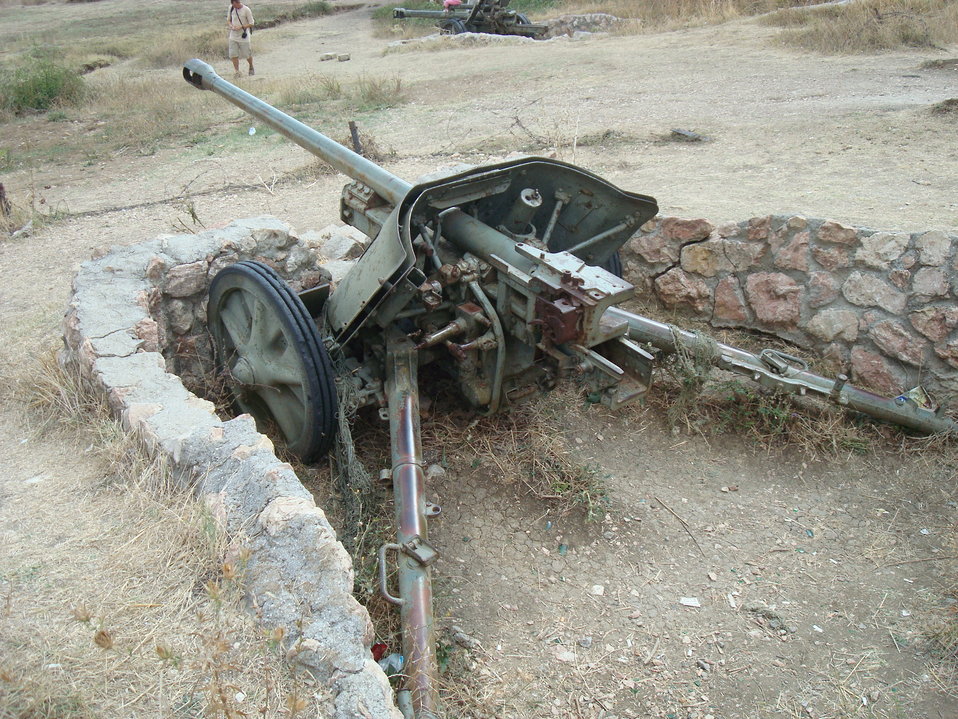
German PaK 38 anti-tank gun, displayed at reconstructed historical positions at Sapun Mountain, Crimea